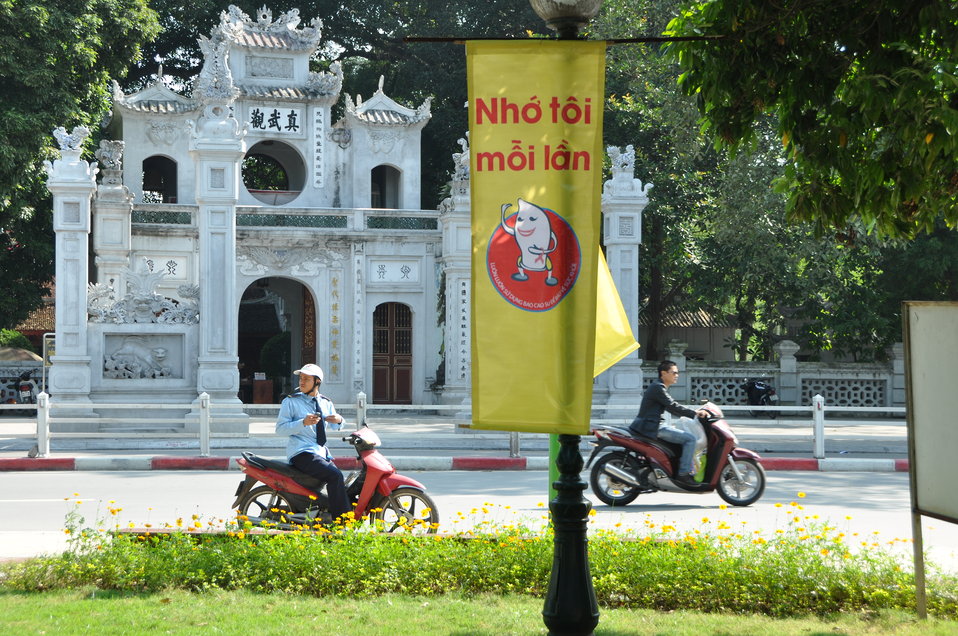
100% Condom Use Campaign Launch, Dec. 2, 2011